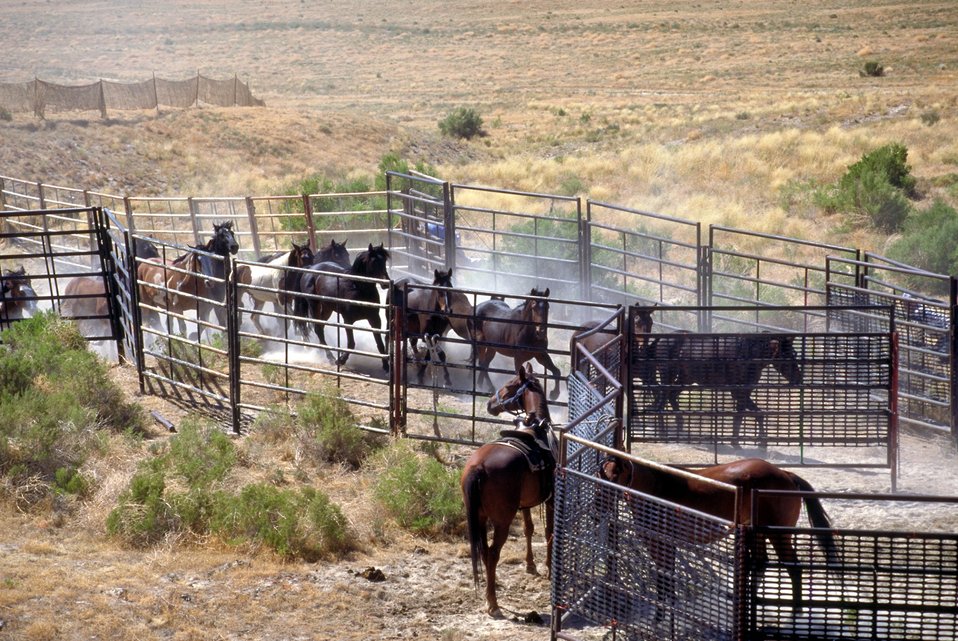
Wild Horse gather, Cedar Mountains.